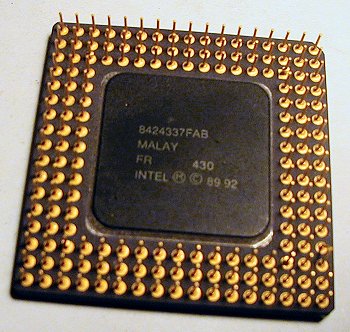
Intel 486 sx processor - photo Eric Demolli free of rights Processor itself is a 'utlity object', bearing no copyrighted logos, and is therefore ineligible for copyright.